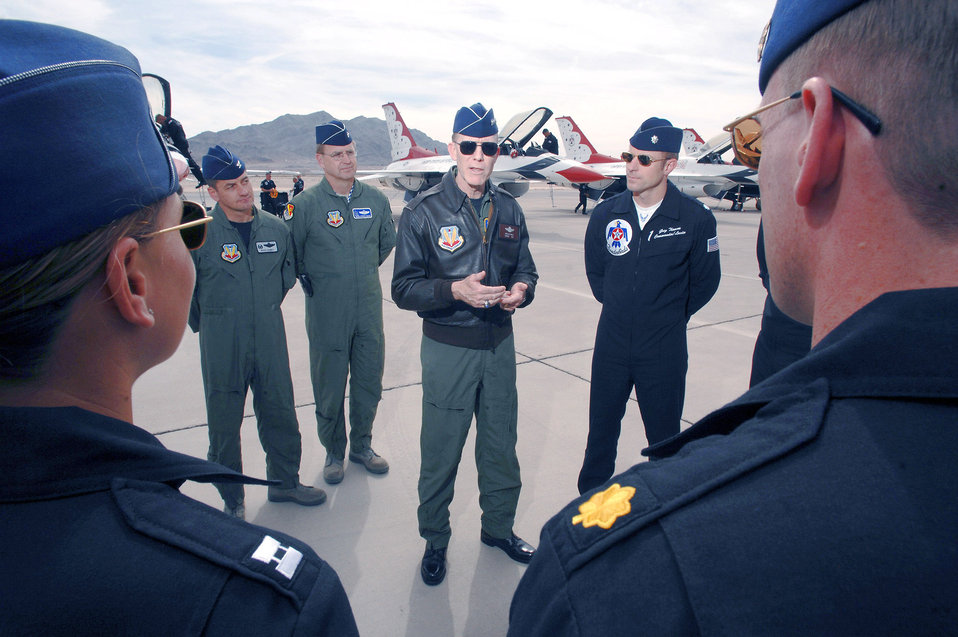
Thunderbirds begin 2008 season

Gen. John D.W. Corley speaks with the Air Force Thunderbirds officers at the March 11 acceptance show at Nellis Air Force Base, Nev. The acceptance show marks the beginning of the 2008 show season, which includes 37 showsites in the United States and Canada. General Corley is the commander of Air Combat Command.